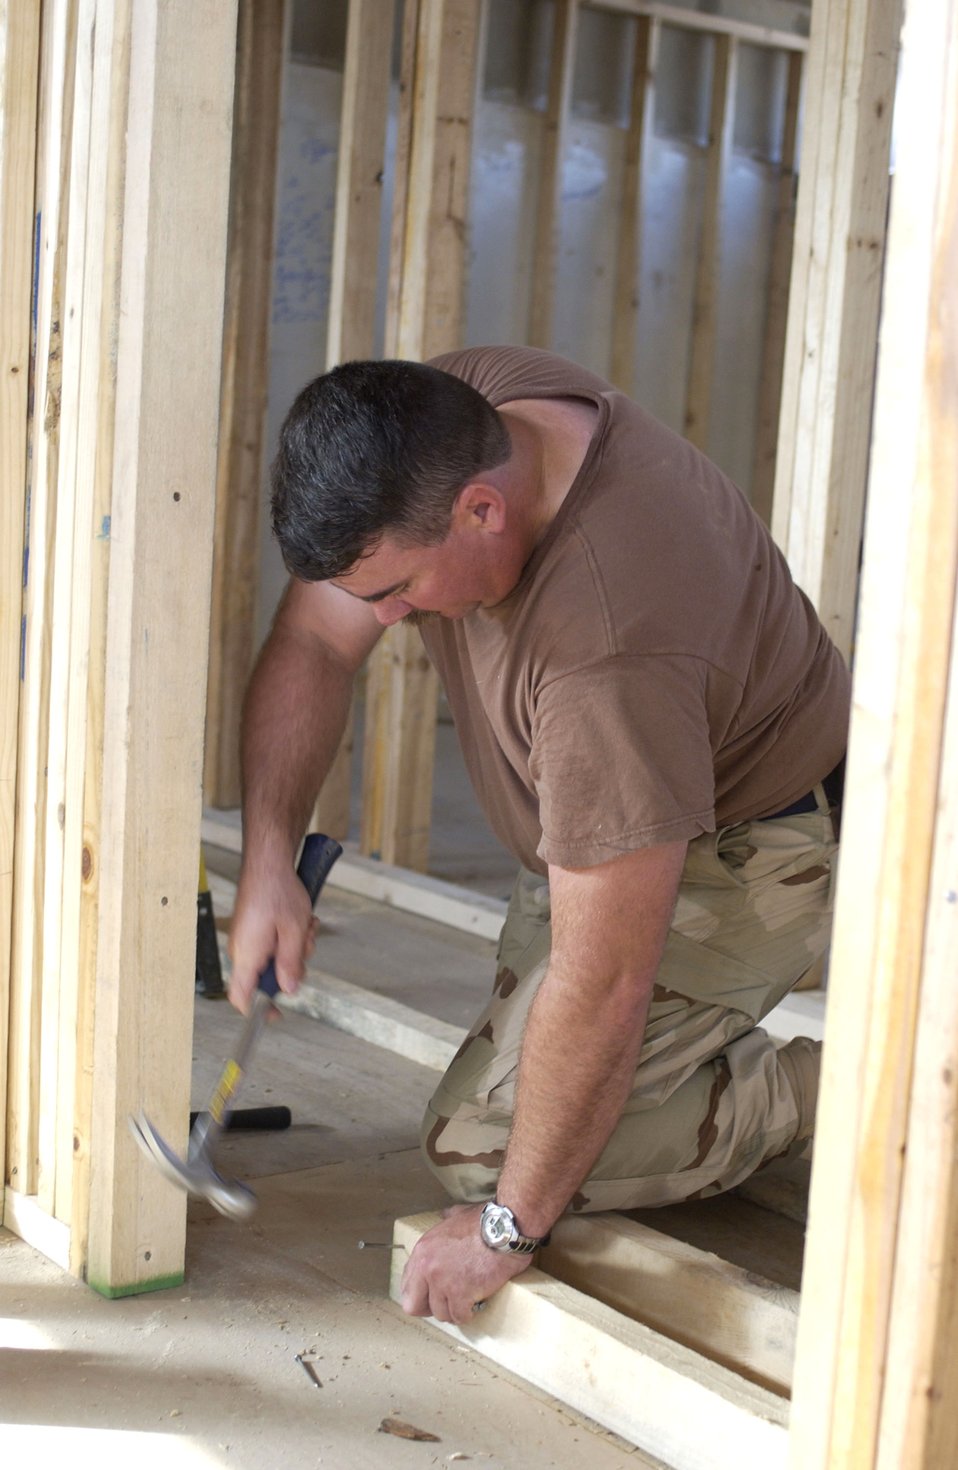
Office renovation

Master Sgt. Tim Owsley works on the renovation of an office building at Balad Air Base, Iraq, on Thursday, April 20, 2006. Sergeant Owsley is with the 557th Expeditionary Red Horse Squadron.